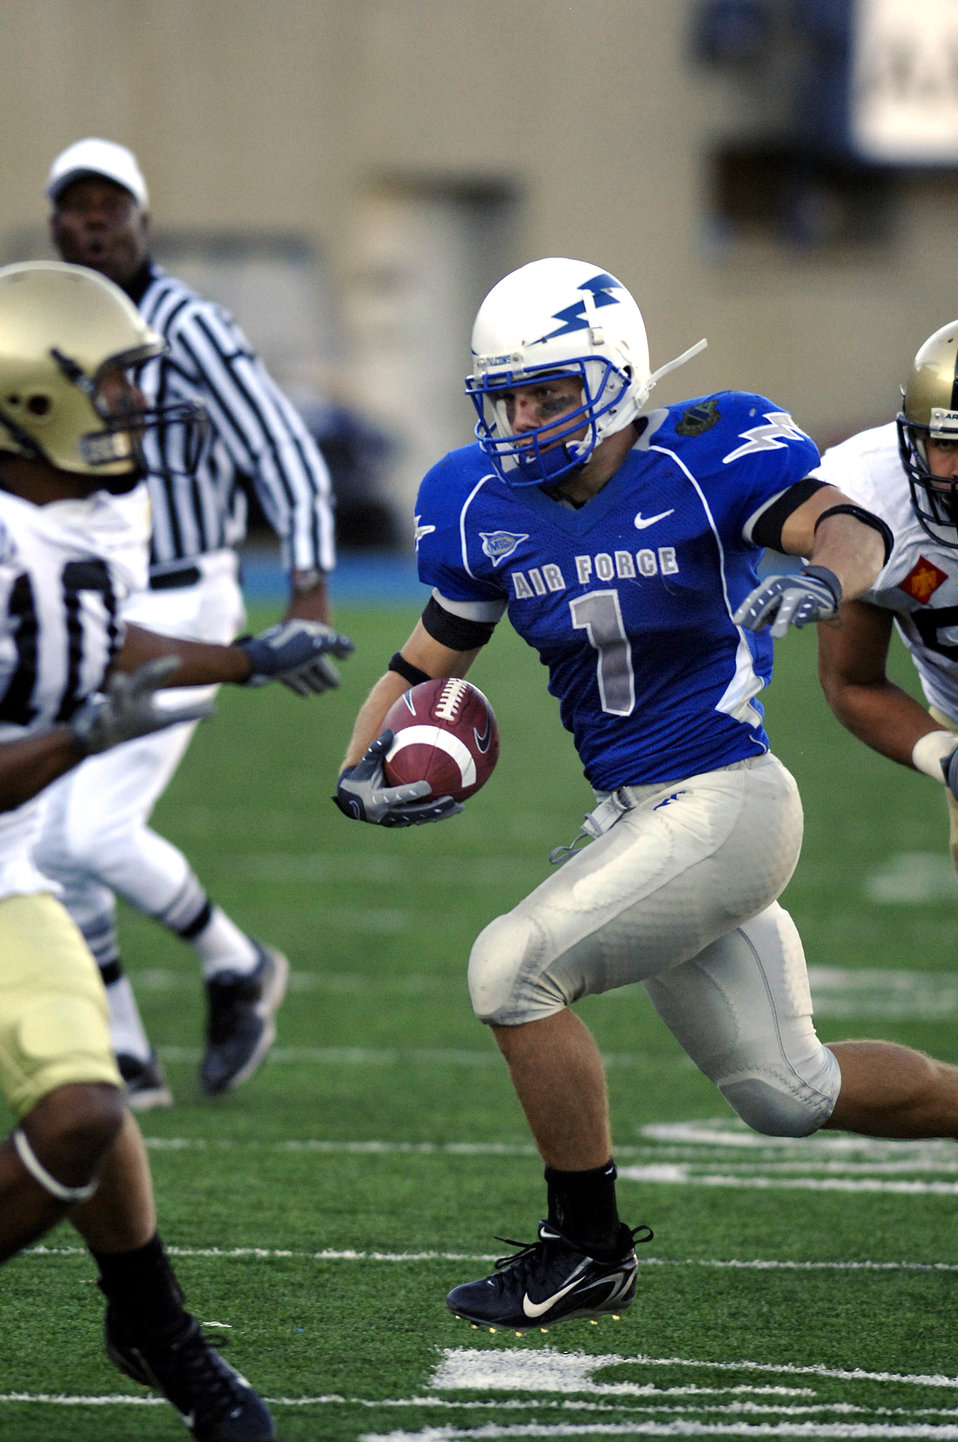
Football: Falcons ride record-breaker Hall over Army

Falcon z-back Chad Hall races through the Army defense during Air Force's 30-10 win over the Black Knights Nov. 3 at Falcon Stadium in Colorado. Hall carried a career-high 34 times for an Academy record 275 yards rushing, an average of 8.1 yards per carry.